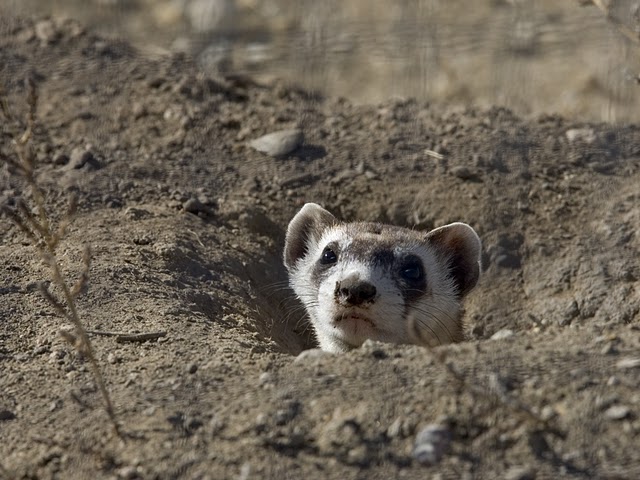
Black-footed Ferret Peers Out of Burrow

Black-footed ferret peers out of a burrow while in a preconditioning pen at the National Black-footed Ferret Conservation Center in Colorado.